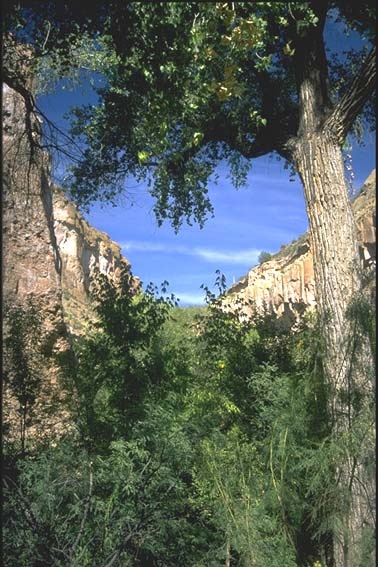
Aravaipa Canyon Wilderness